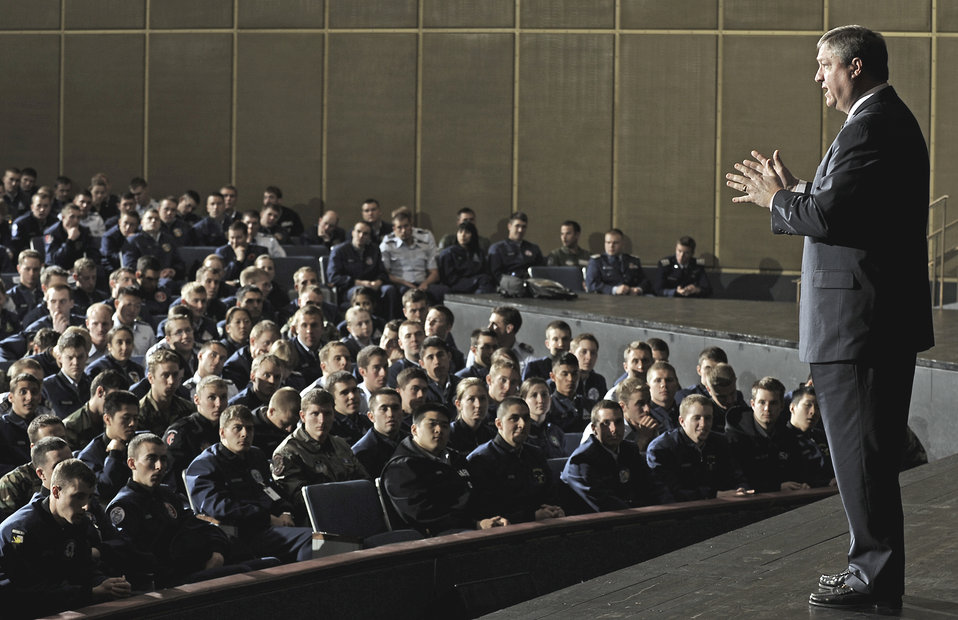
'Visions of Valor' portraits honor heroes

Secretary of the Air Force Michael B. Donley briefs the U.S. Air Force Academy cadet wing during a cadet call held at Arnold Hall April 3 at the Academy in Colorado. The secretary also answered cadet's questions that ranged in issues from the plans for a new unmanned aircraft system careerfield to impacts the increased deployments to Afghanistan will have on the Air Force.